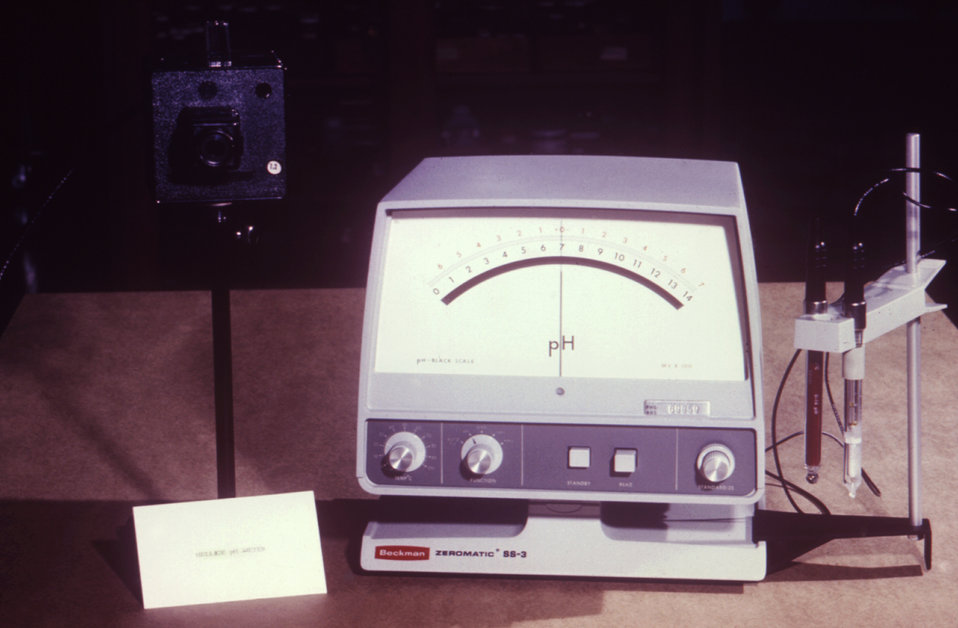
This laboratory device is used to measure the pH value of a solution, i.e., its concentration of hydrogen ions read as [H ].